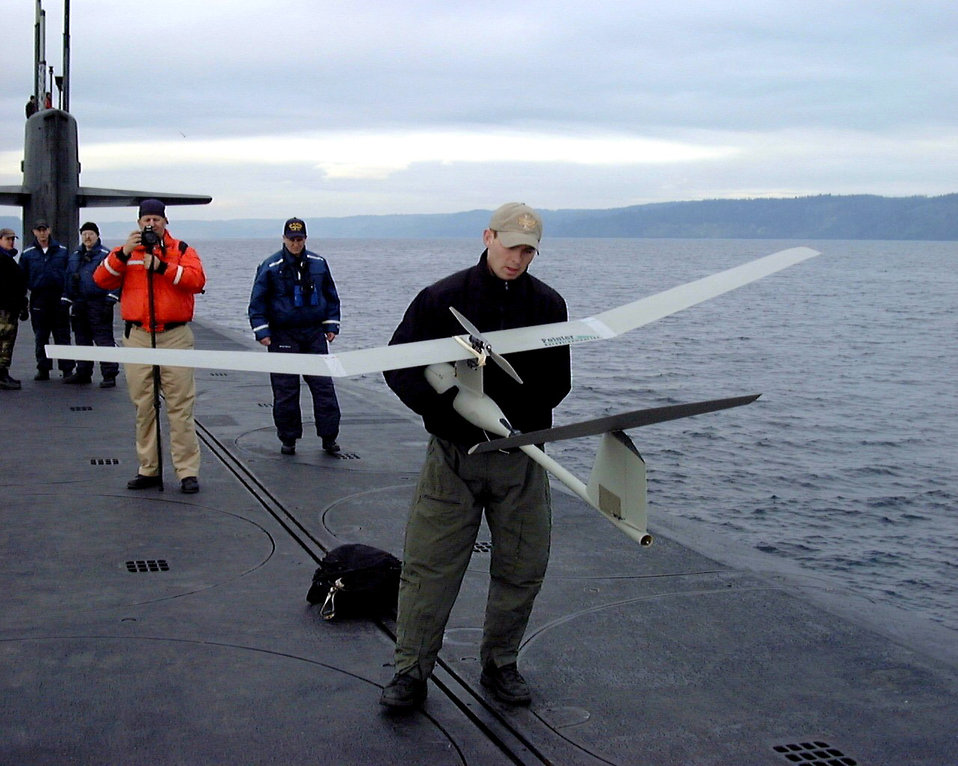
UAV sub

ONBOARD USS ALABAMA (AFPN) -- Airmen with the 22nd and 23rd Special Tactics squadrons launch a Pointer unmanned aerial vehicle during an exercise. The exercise tested special operations infiltration and rescue tactics. The joint effort also tested the capabilities of the Ohio-class ballistic missile submarines, which enter service next year. The submarines are being converted from ballistic missile submarines to guided missile submarines with new capabilities.